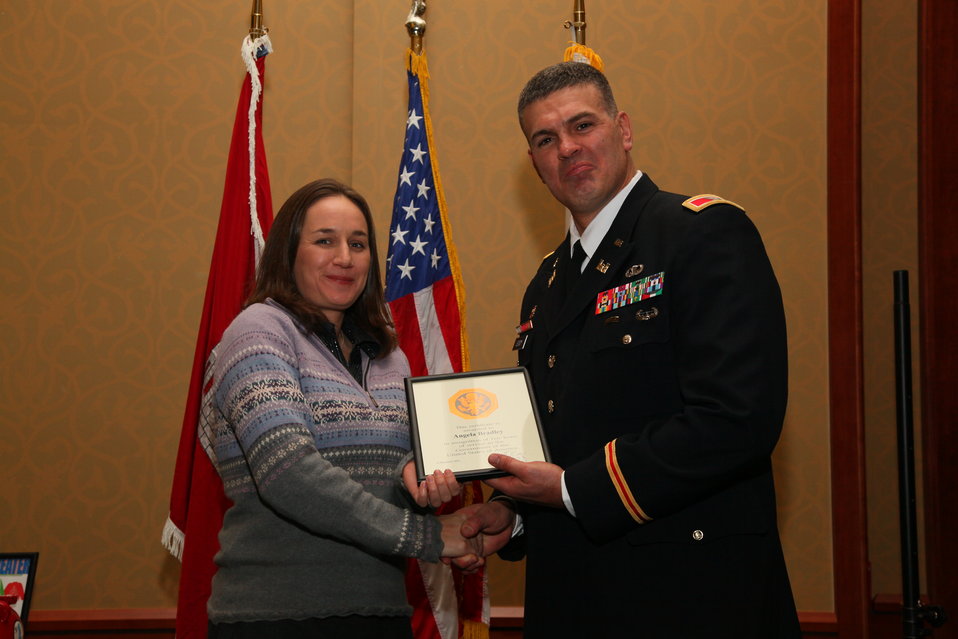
Sacramento District Holiday Party 2011